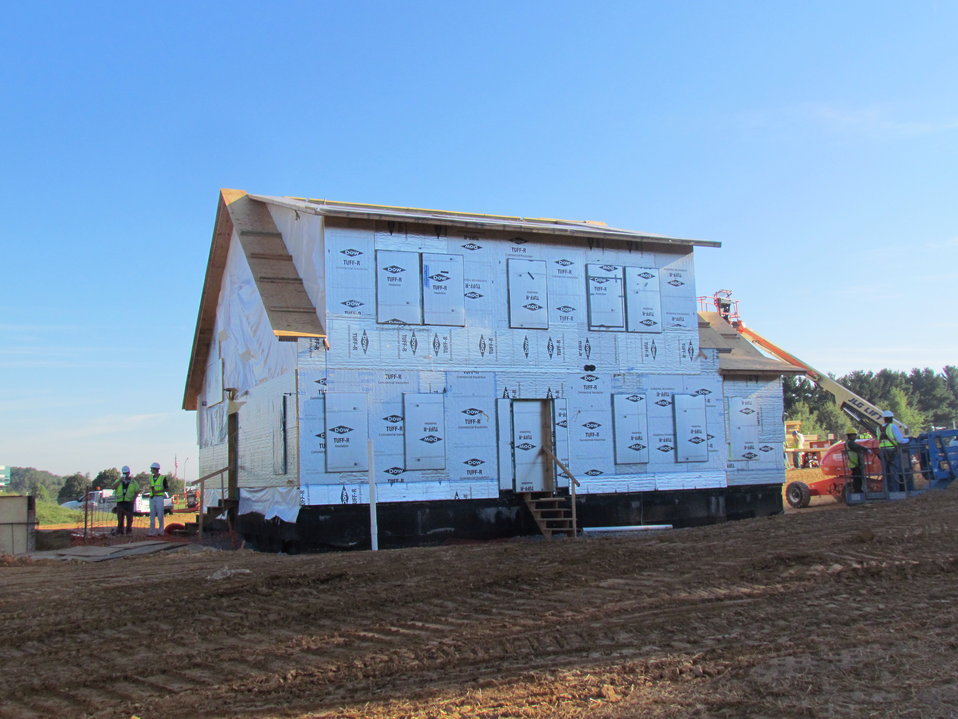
Net-Zero Energy Residential Test Facility - Photo showing first layer of foil-faced insulation on front of facility. Window openings are covered to permit air-leakage testing prior to continuation of construction.